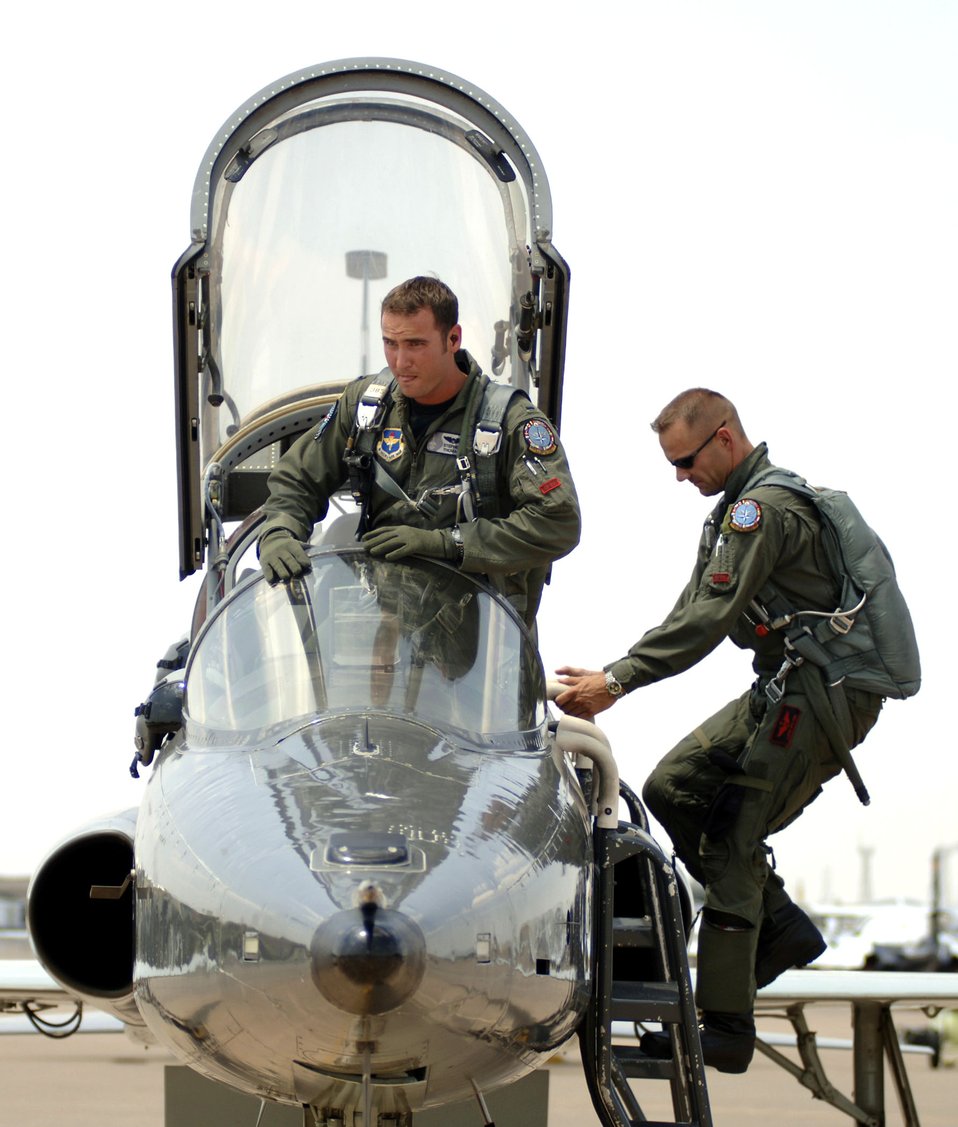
No matter the nationality, pilots speak same language

First Lt. Stephen Thomas (left) and Capt. Lars Holten prepare for take-off in a T-38 Talon at Sheppard Air Force Base, Texas. Captain Holten, from Norway, and Lieutenant Thomas are in the Euro-NATO Joint Jet Pilot Training program; the captain is an instructor pilot.